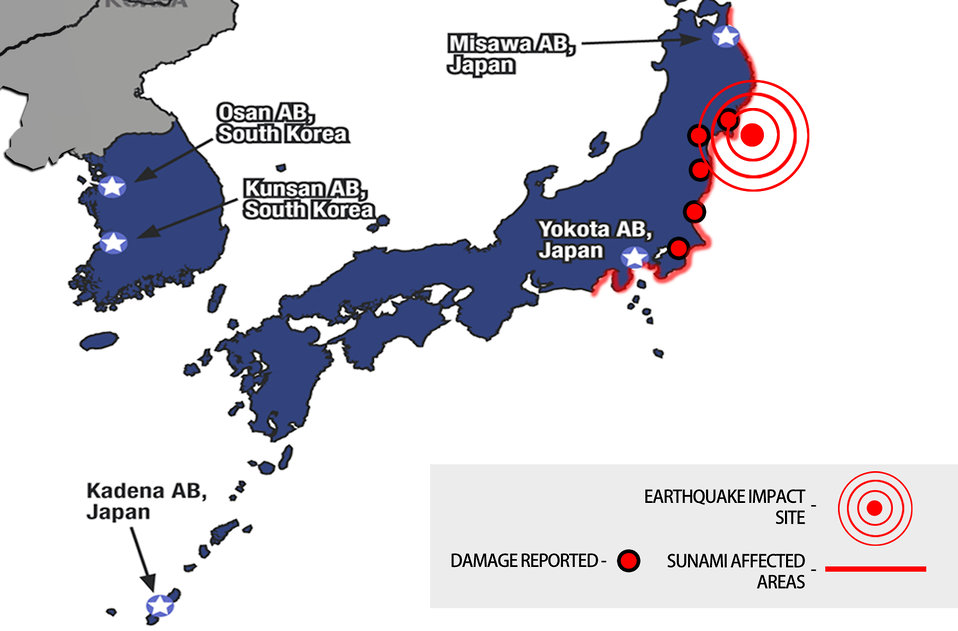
Map of Japan